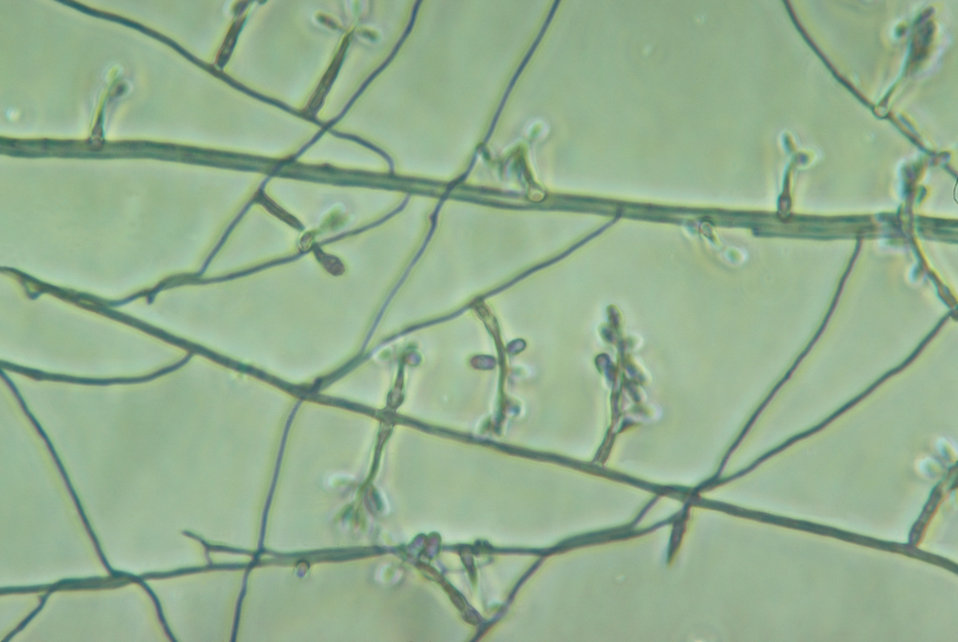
This photomicrograph reveals the conidia of a member of the fungal genus Ochroconis, formerly known as Dactylaria.